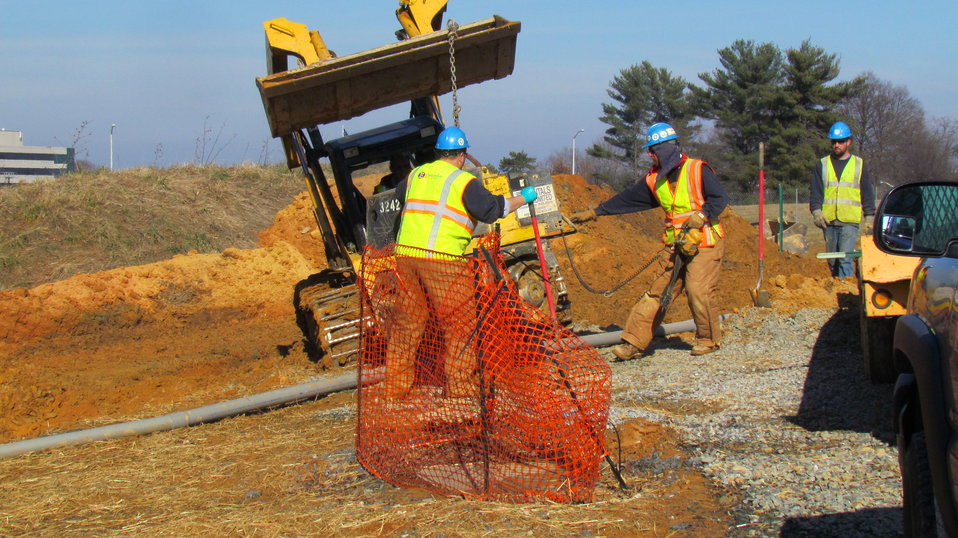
Net-Zero Energy Residential Test Facility – Workmen installing conduits that will contain instrumentation wiring to monitor the performance of the earth-coupled heat pump systems that will be used for future research.